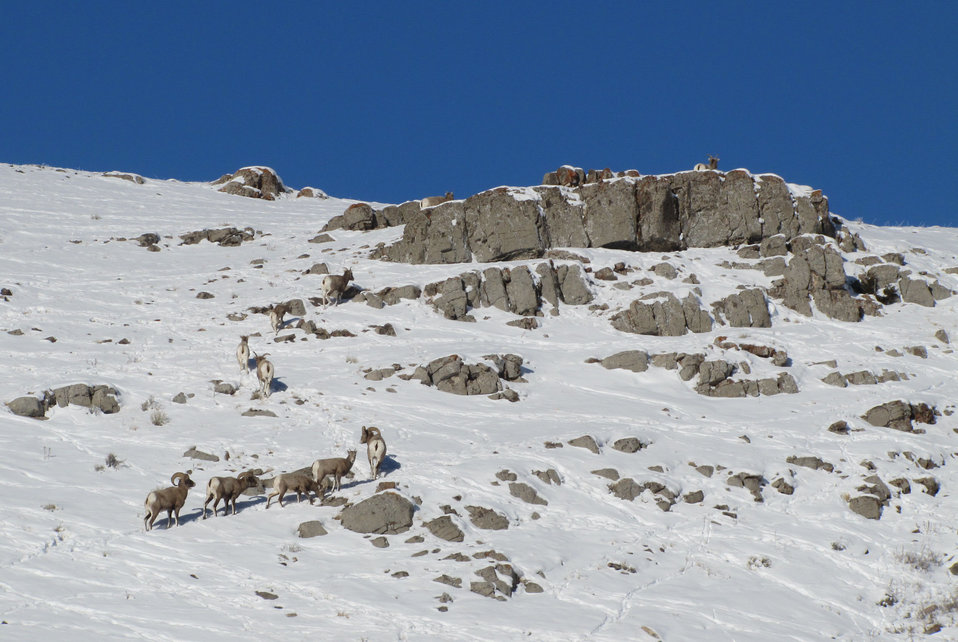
Single File Trek

A group of bighorn sheep make their way single file up Miller Butte on the National Elk Refuge. The animals use the rocky terrain and their amazing mobility there as defense against prey.